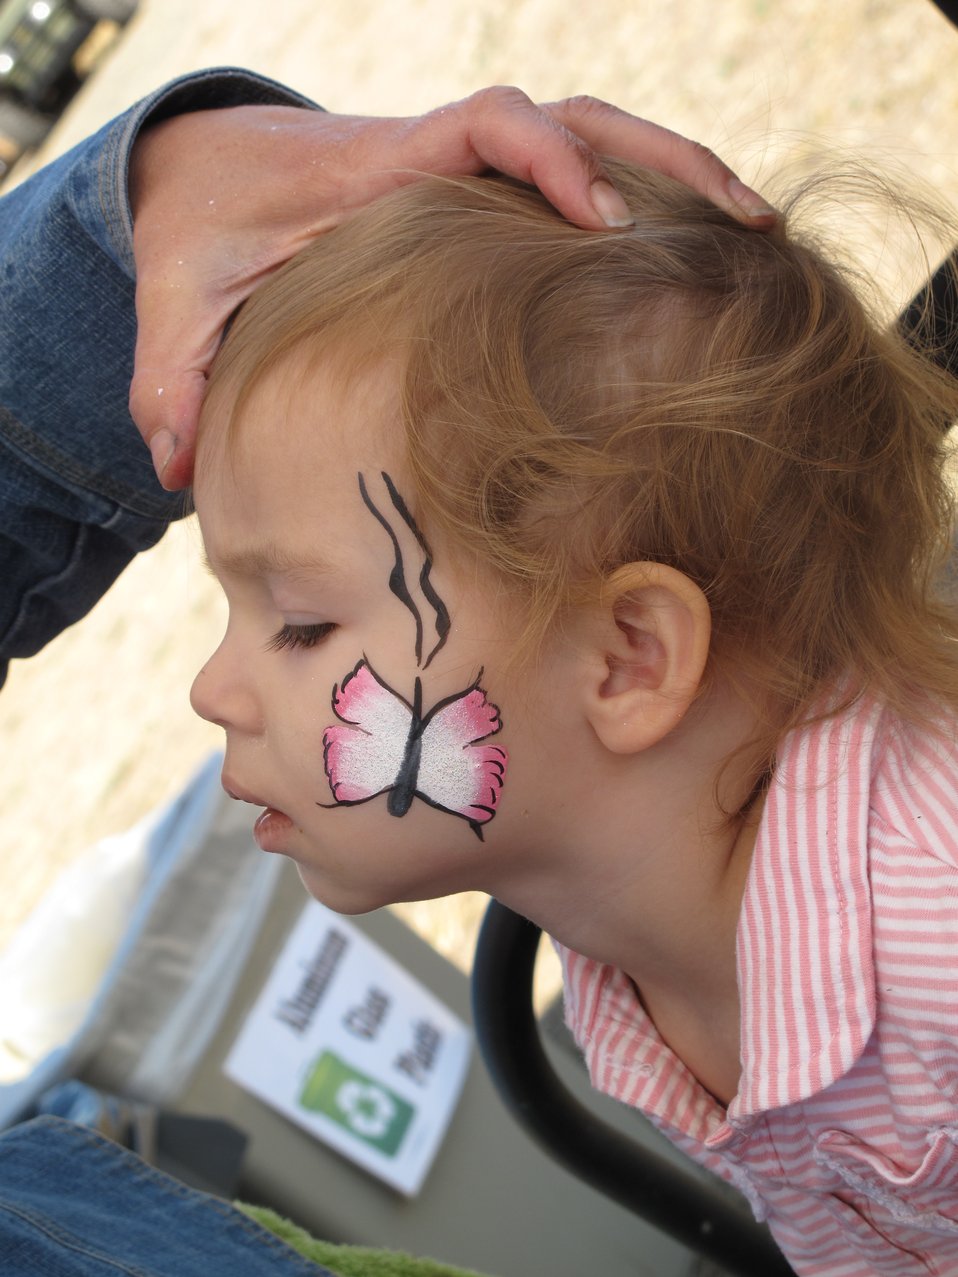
Refuge Round-up 2010

Face painting at the Rocky Mountain Arsenal Refuge Round-Up in Colorado.